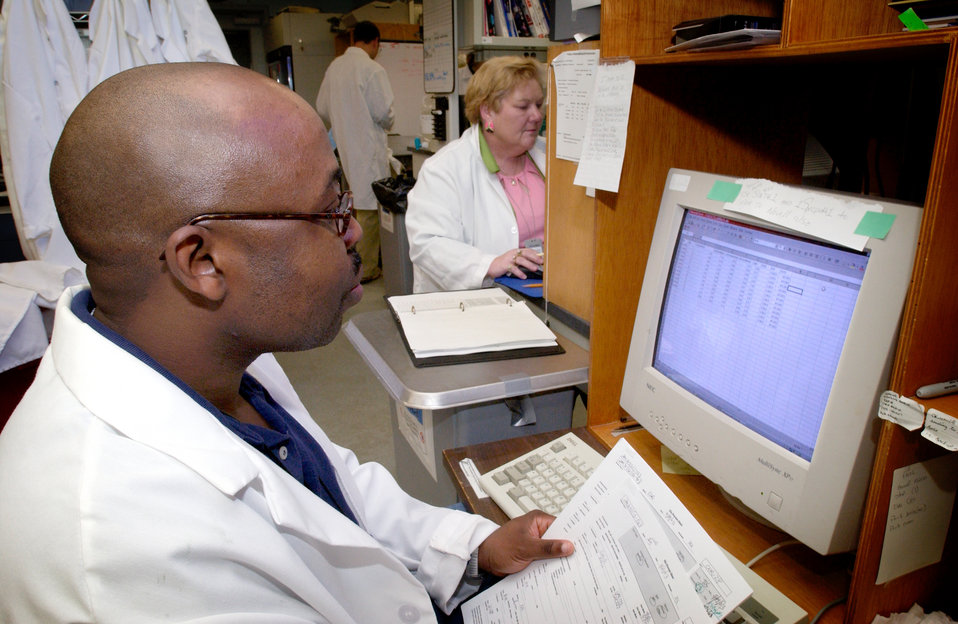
This image depicts CDC researchers as they review incoming SARS data using a SPB diagnostic laboratory computer workstation in the foreground, while in the background, the data entry is being carried out.